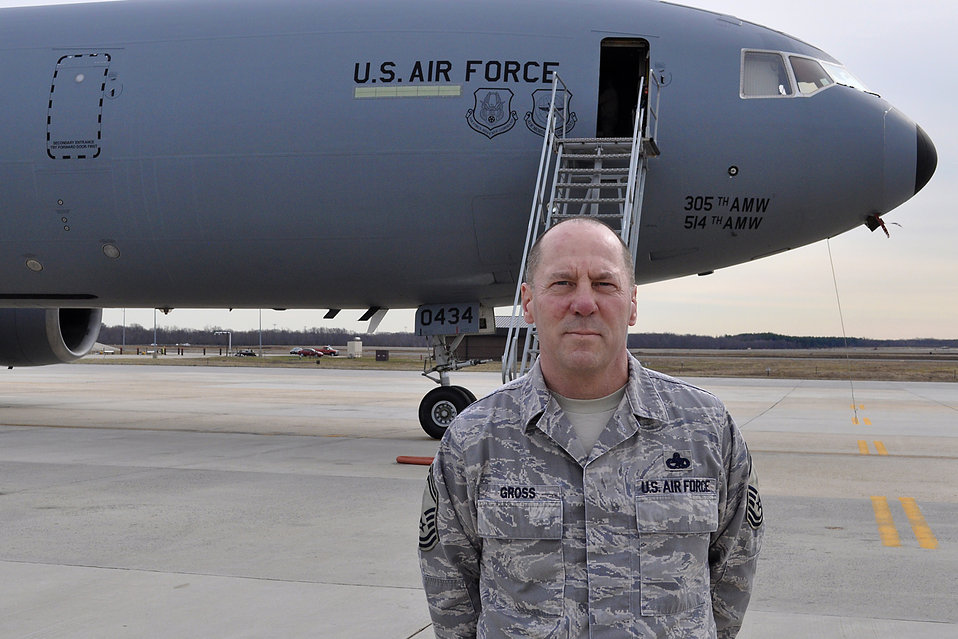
KC-10's 30th Birthday

Senior Master Sgt. Bill Gross stands on the flightline March 8, 2011at Joint Base Mcguire-Dix-Lakehurst, N.J. Sergeant Gross was a long-time crew chief assigned to the Air Force's first KC-10 and has been stationed with the aircraft for nearly his entire career. As the KC-10 celebrates its 30th year of Air Force service on March 17, 2011, Sergeant Gross can claim that he has been there every step of the way.